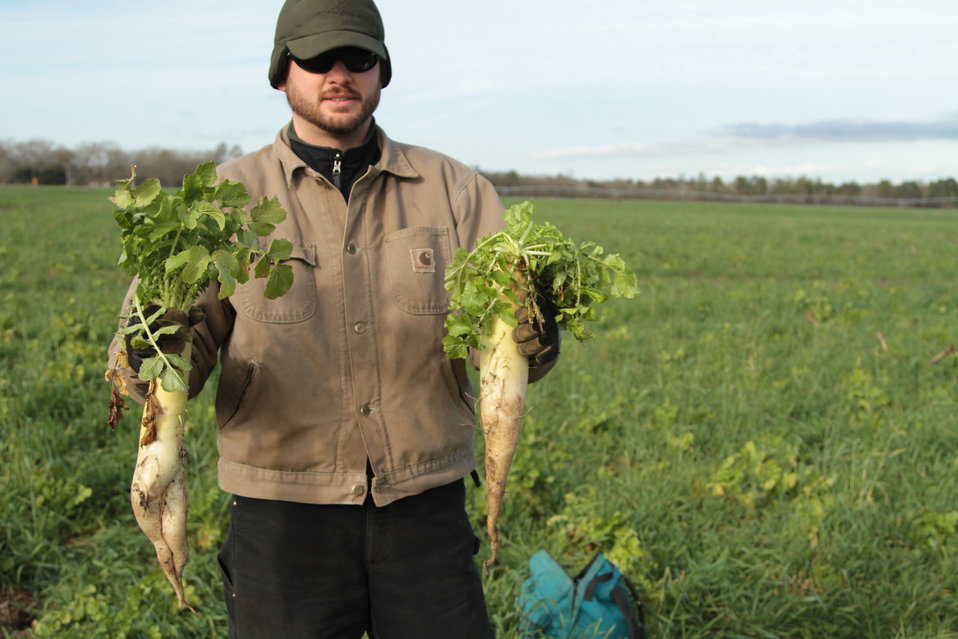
Jason Carter is one of the five South Carolina farmers participating in a field study funded through a U.S. Department of Agriculture (USDA) Natural Resource Conservation Service (NRCS) Conservation Innovation Grant. His tillage radishes are part of his multispecies cover crop mix.